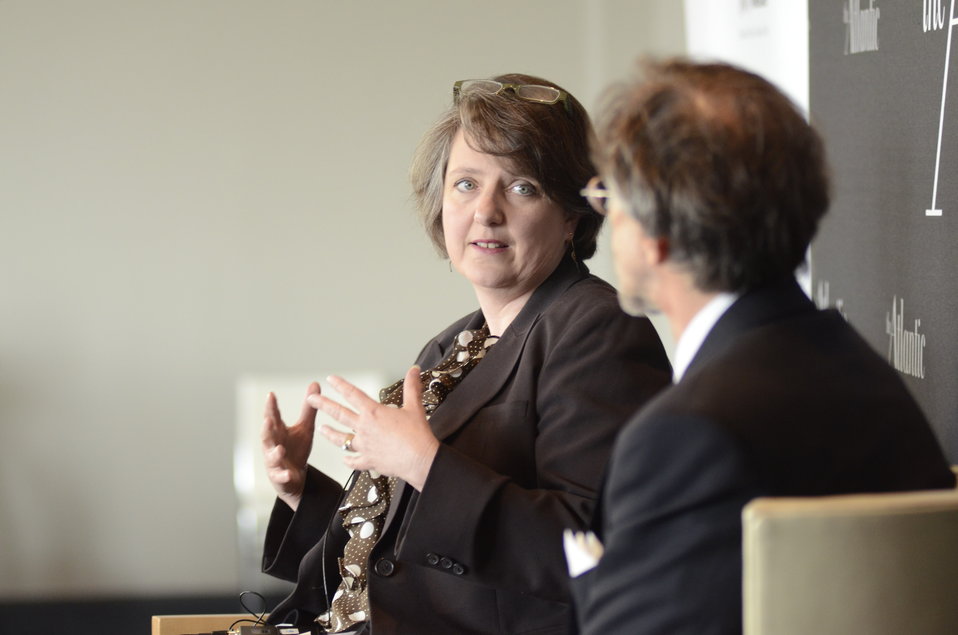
The Atlantic Senior Editor Corby Kummer interviews Agriculture Deputy Secretary Kathleen Merrigan at the 3rd Annual Food Summit held at the W Hotel in Washington, D.C. on Thursday, May 24, 2012. The Food Summit event includes interviews, panel discussions and symposia with leading authorities on issues related to food, food security, and nutrition.